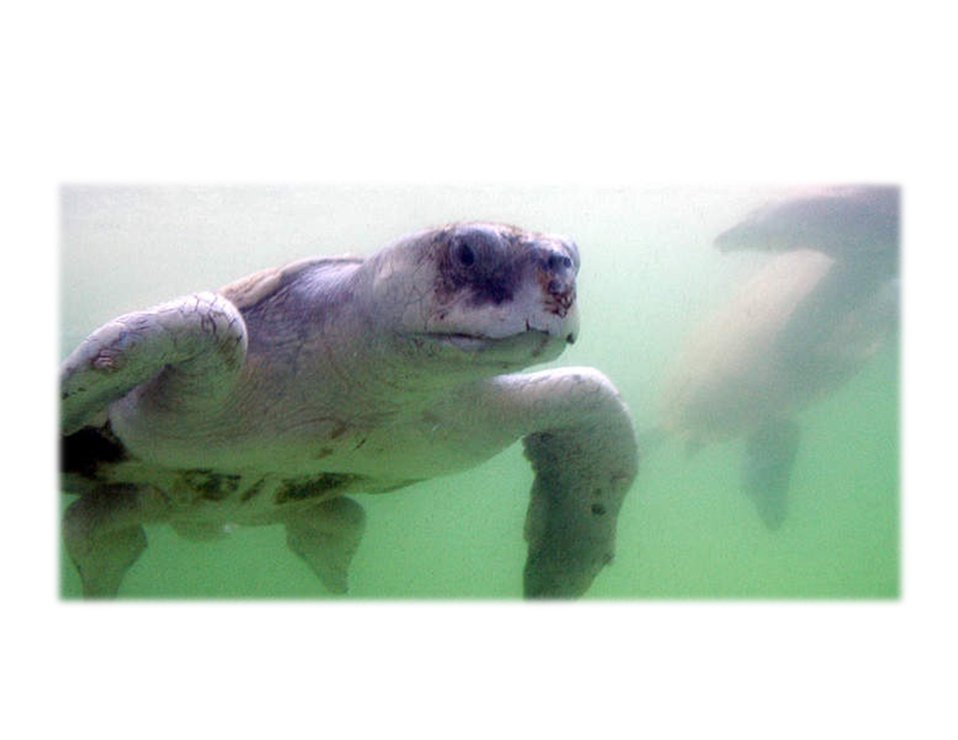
Louisiana turtle